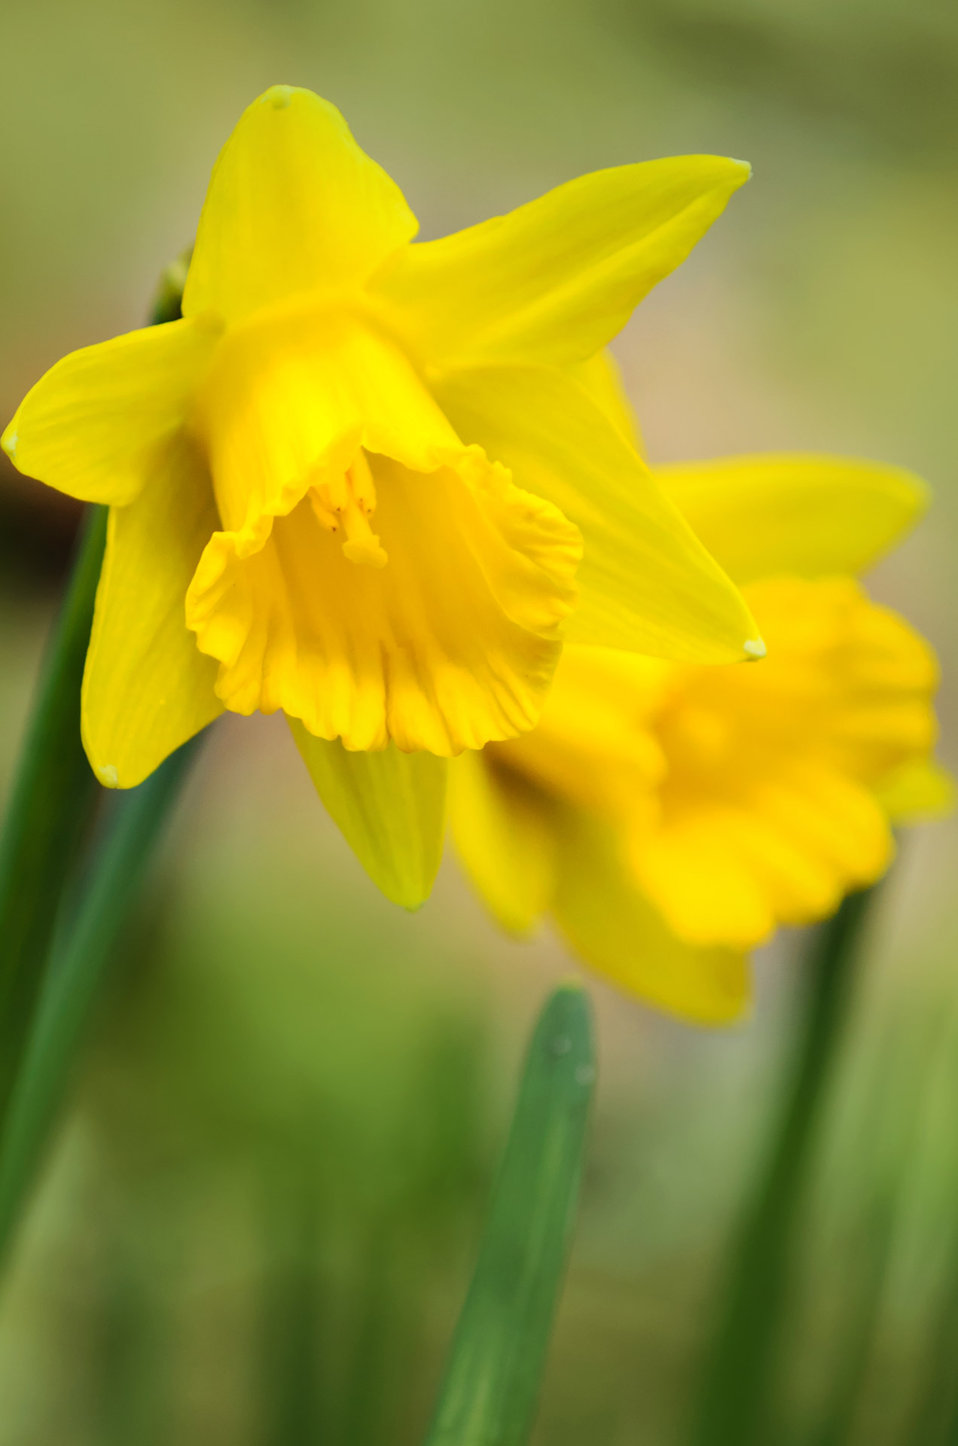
Flower

Spring flower.